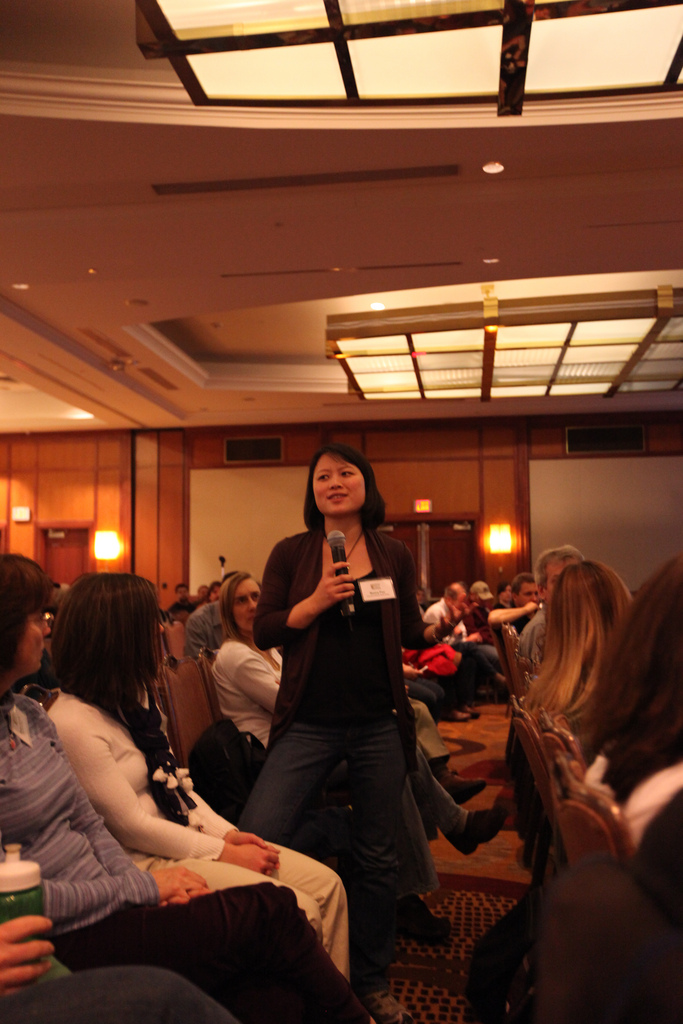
Town Hall

Biologist speaking at the Friday morning Town Hall session, where attendees were welcome to discuss their ideas on how to further landscape conservation.